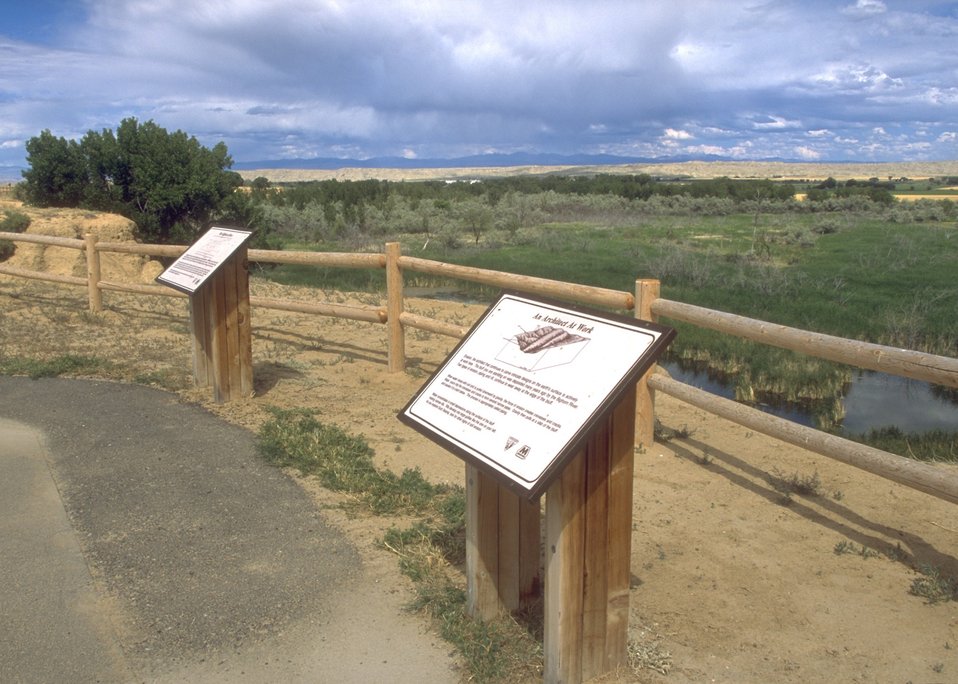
Duck Swamp Interpretive Area, Worland Field Office.